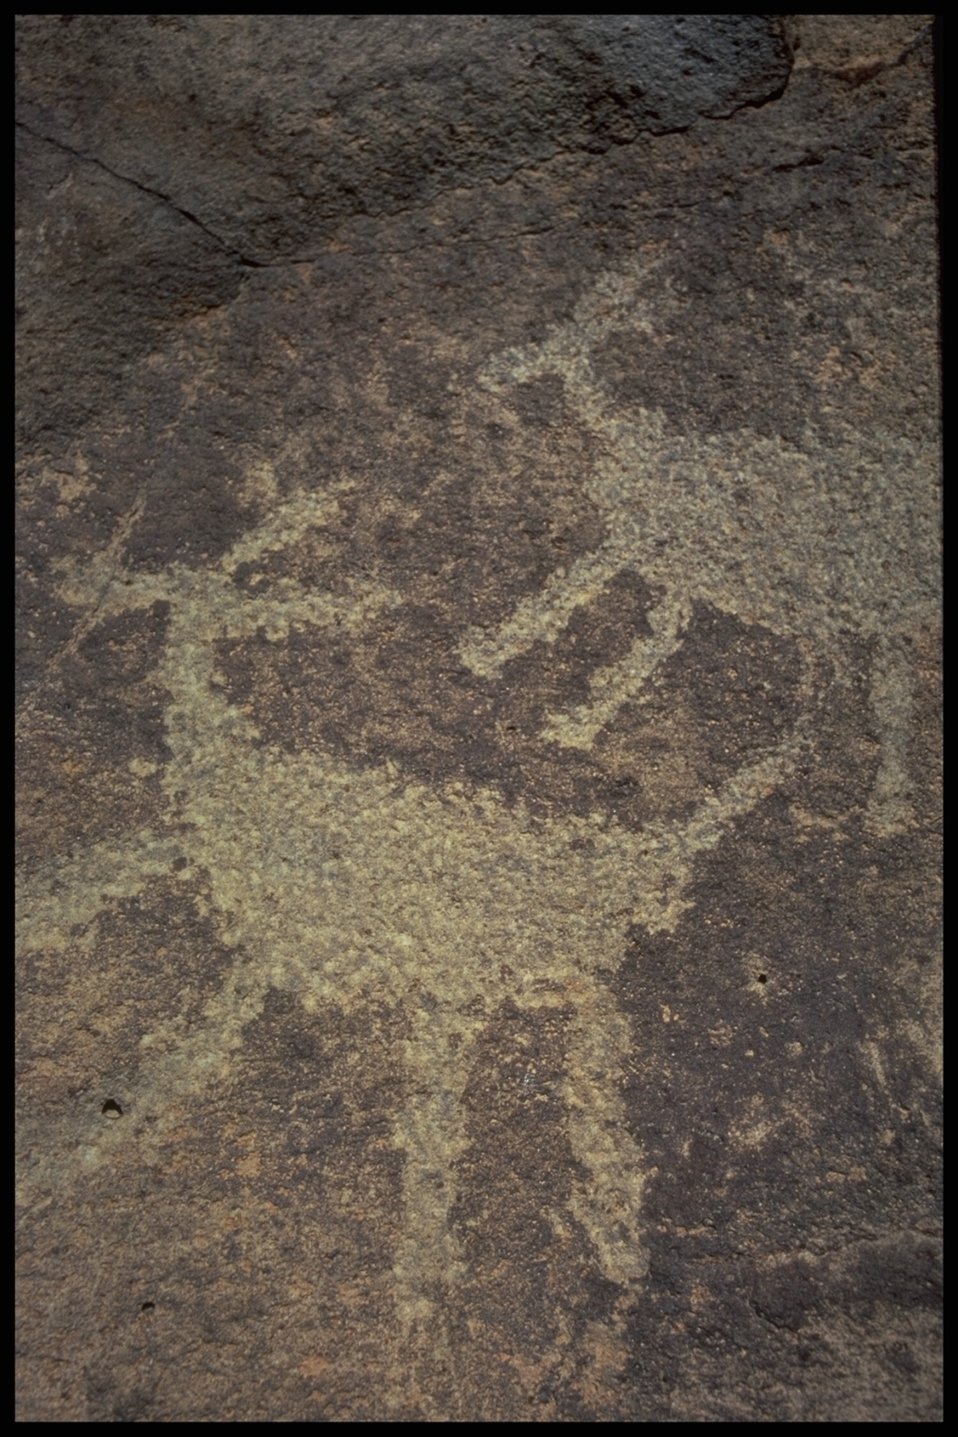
Petroglphs (Rock Art) can be found throughout the 71,000 Acres that make up the Agua Fria National Monument.